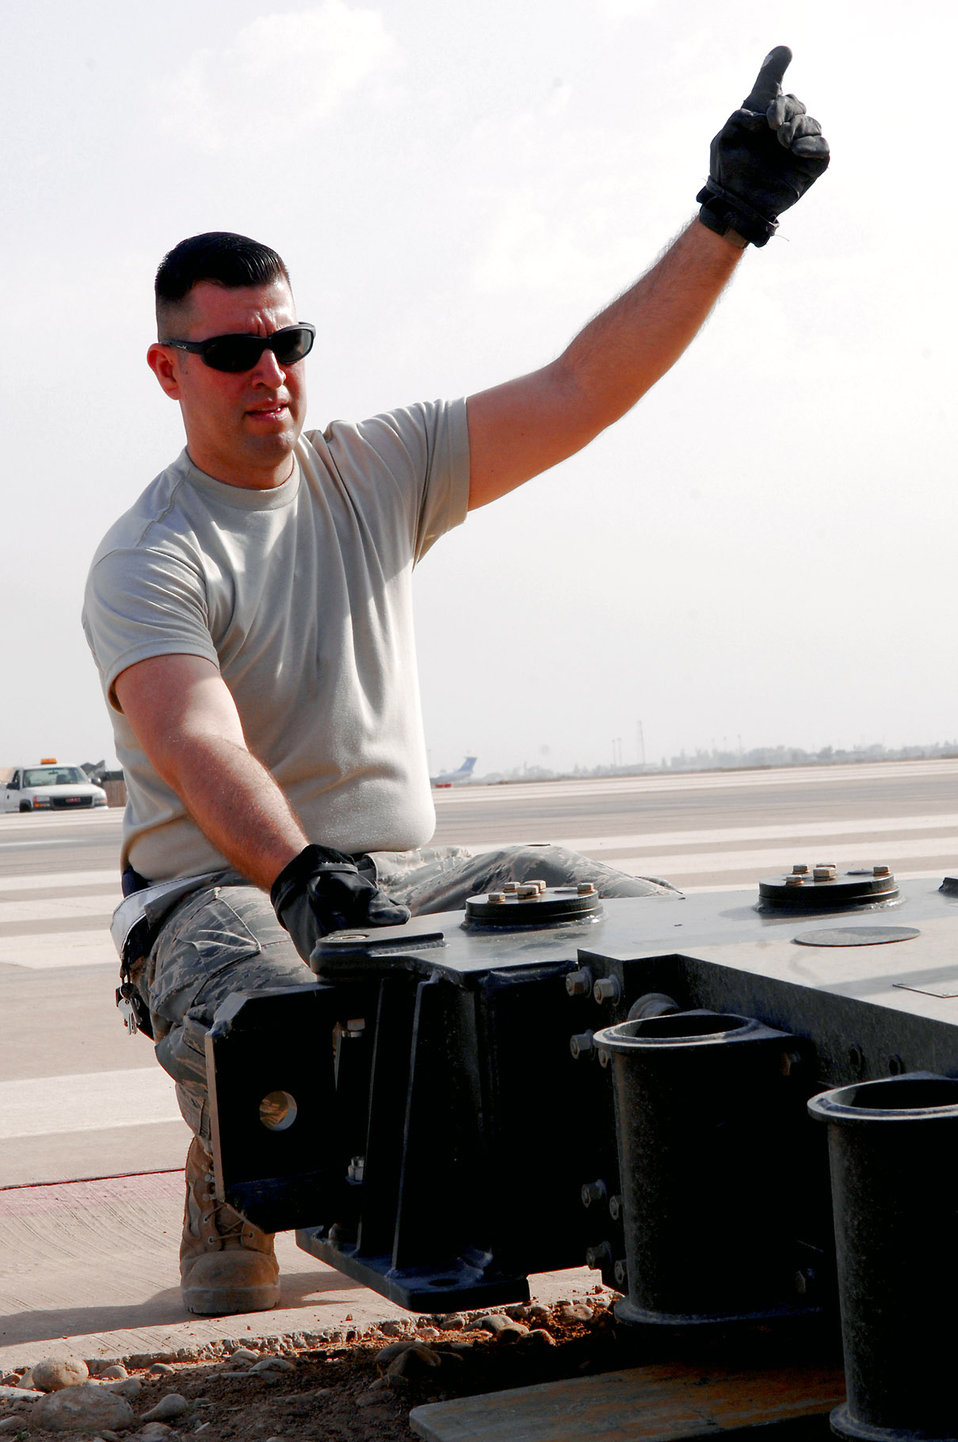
Arresting development

Tech. Sgt. Emmanuel Ramirez guides a forklift to place an arresting barrier system on the runway March 12 at Balad Air Base, Iraq. The system is composed of a cable stretched out across the runway attached to a braking system that brings fighter aircraft to a smooth halt during emergency landings. Sergeant Ramirez is a 332nd Expeditionary Civil Engineer Squadron power production technician deployed form Peterson Air Force Base, Colo.